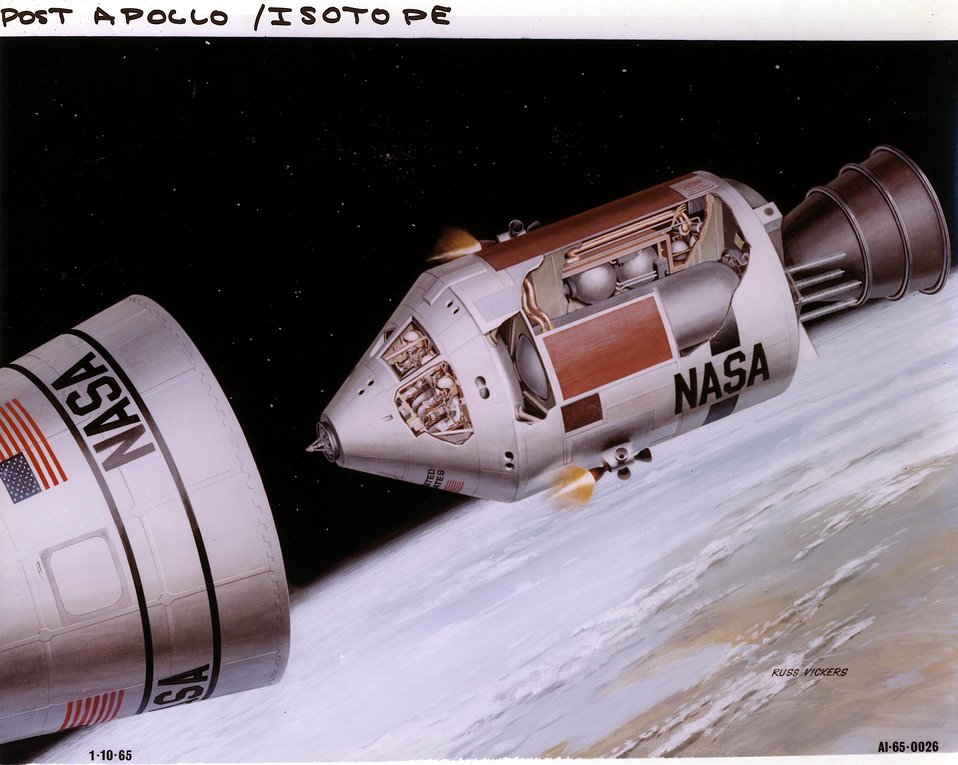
Post Apollo/ Isotope